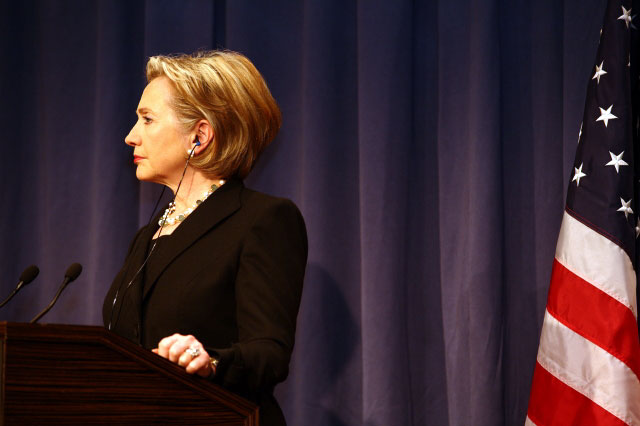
Press Conference With Russian Foreign Minister

Press conference after dinner meeting between U.S. Secretary of State Hillary Rodham Clinton and Russian Foreign Minister Sergey Lavrov in Geneva, Switzerland March 6, 2009.